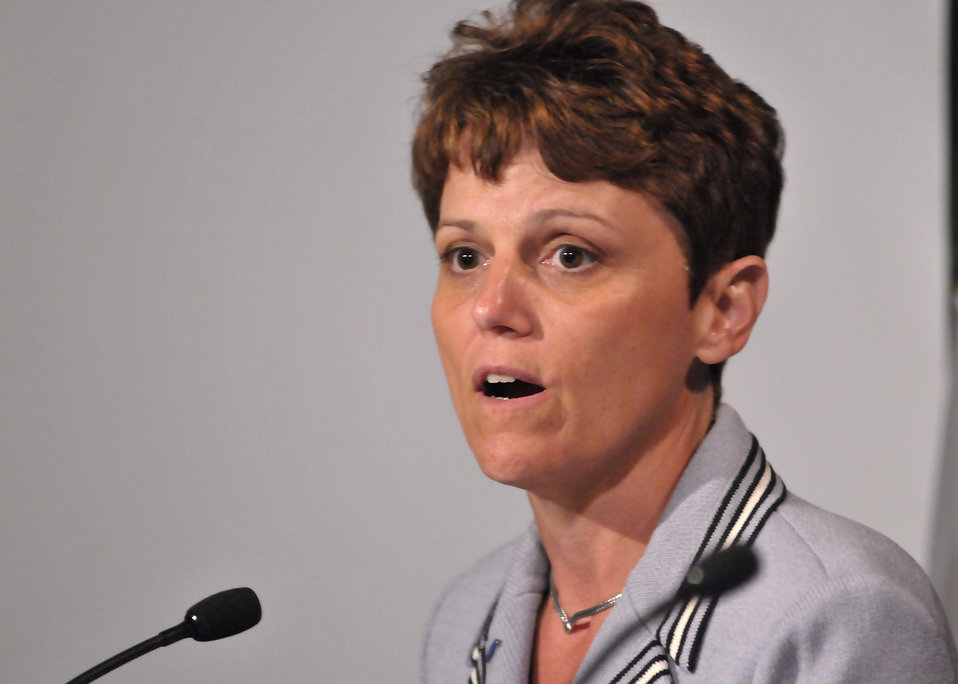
Nancy Gioia, Ford